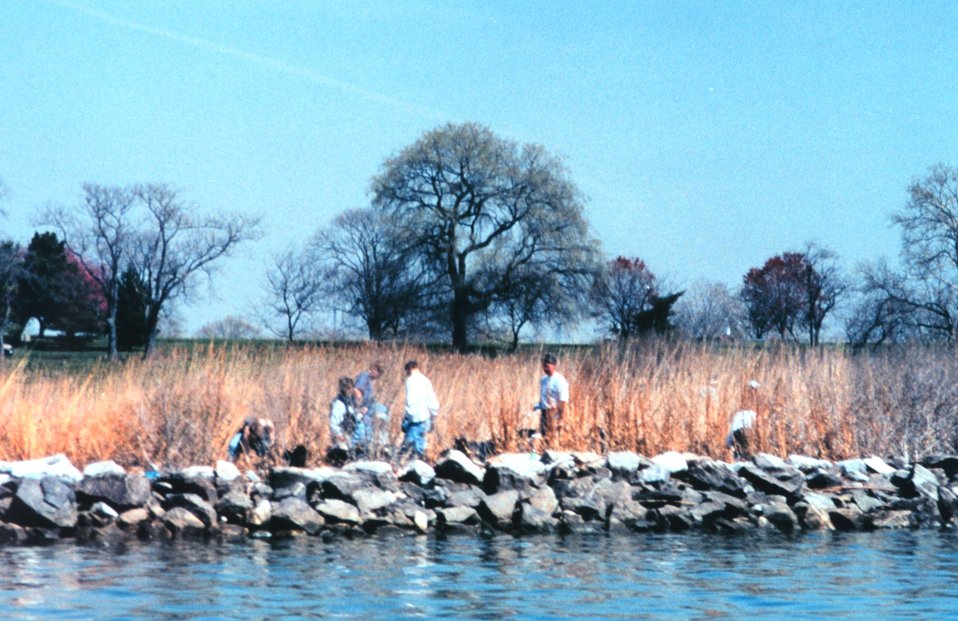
Volunteers helping clean up the wetlands and waterfront area around Fort McHenry in Baltimore Harbor.